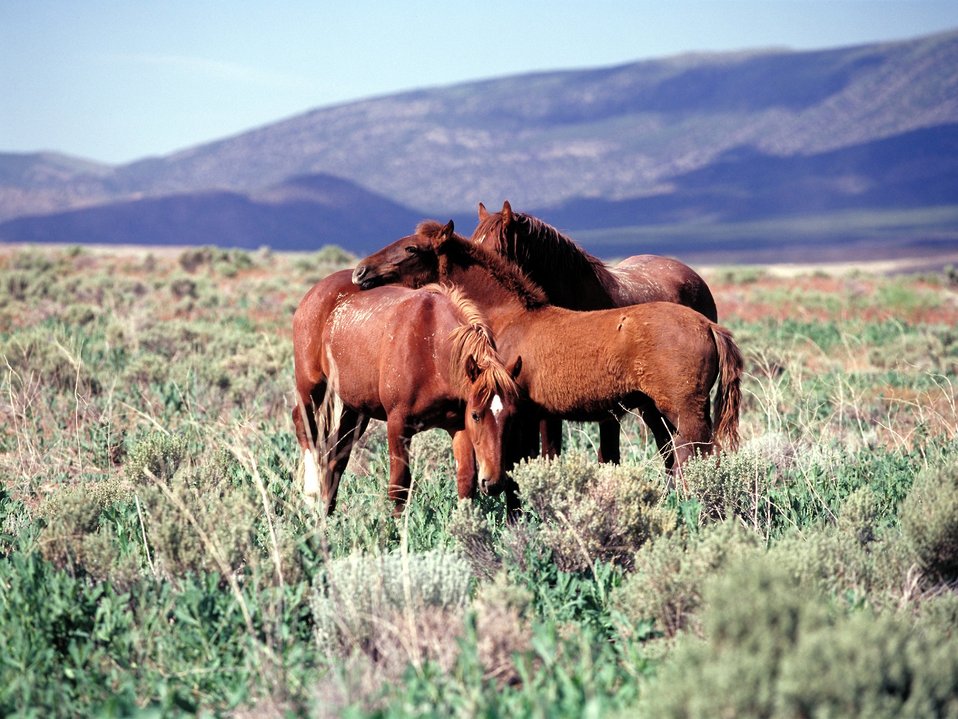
Onaqui Herd near Dugway, Utah.